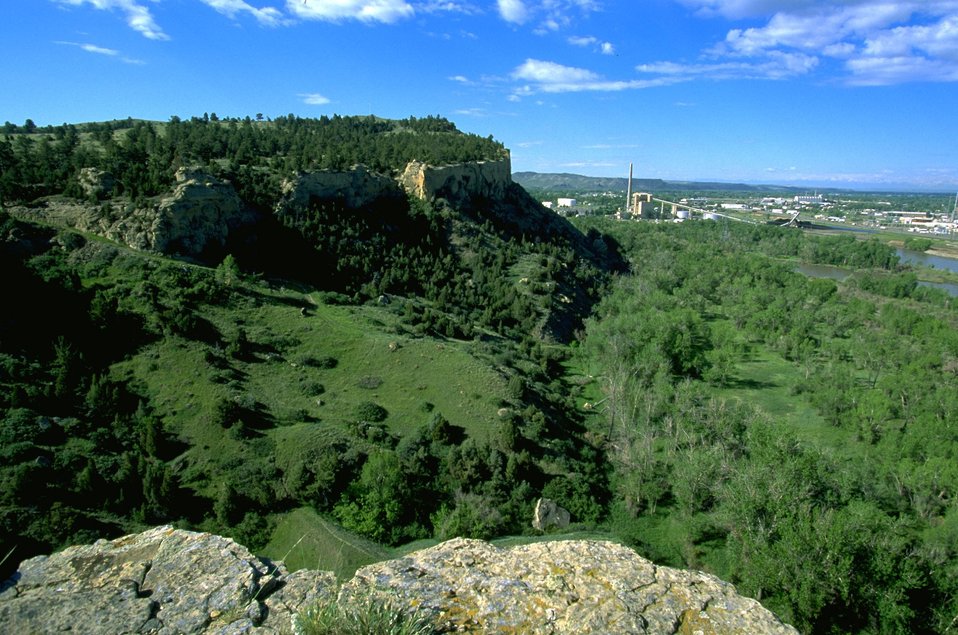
Four Dances Natural Area east of Billings. Oil refinery in Billings in the background